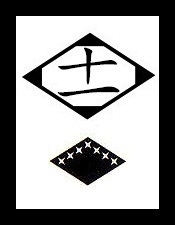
Español: Insignia y logo de escuadron shinigami de Bleach